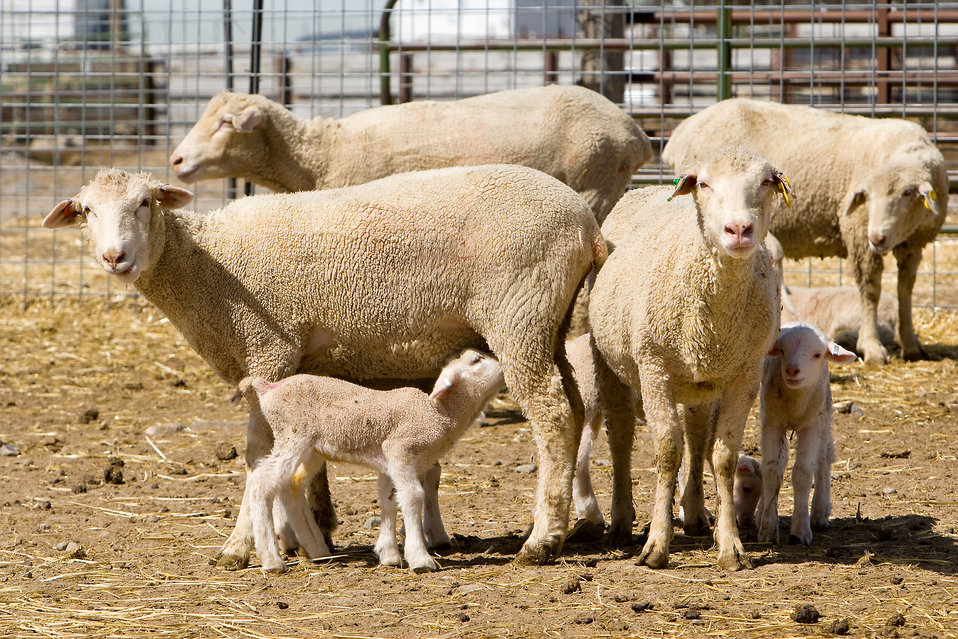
A lamb nurses from a ewe in a fenced in area on Apr. 21, 2006. In western areas where some rangeland vegetation doesn’t contain enough selenium for grazing animals, ewes that consume a natural high-selenium supplement in their food can pass the needed selenium to nursing offspring in their milk.